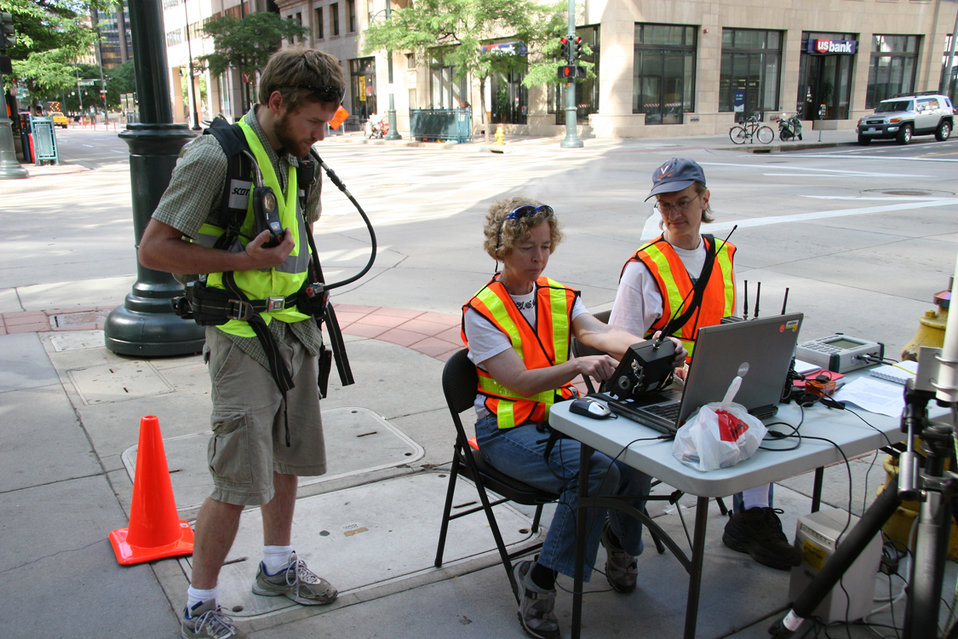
Wireless Communications; Cell Phone

NIST engineer Kate Remley (center) was part of a team that conducted wireless communications tests using several different technologies in downtown Denver in 2009. At left is Jeremy May, a participant in NIST's Summer Undergraduate Research Fellowship program, and David Matolak, a professor at Ohio University in Athens, OH.